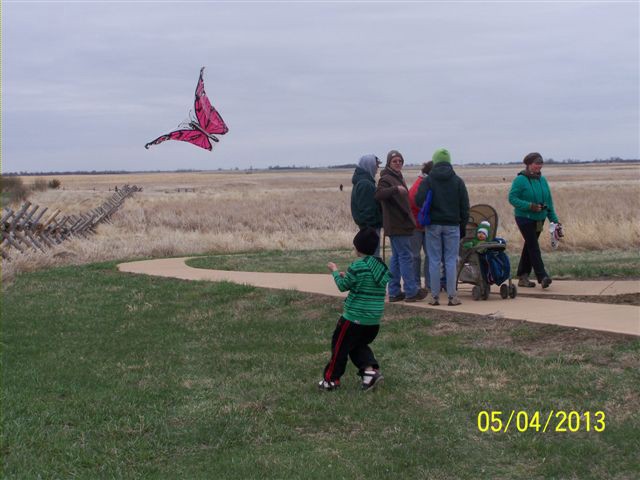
May Nature Fun Day 2013

Flying some kites on our Maga Ta-Hohpi WPA. One of the many activities people could participate in.